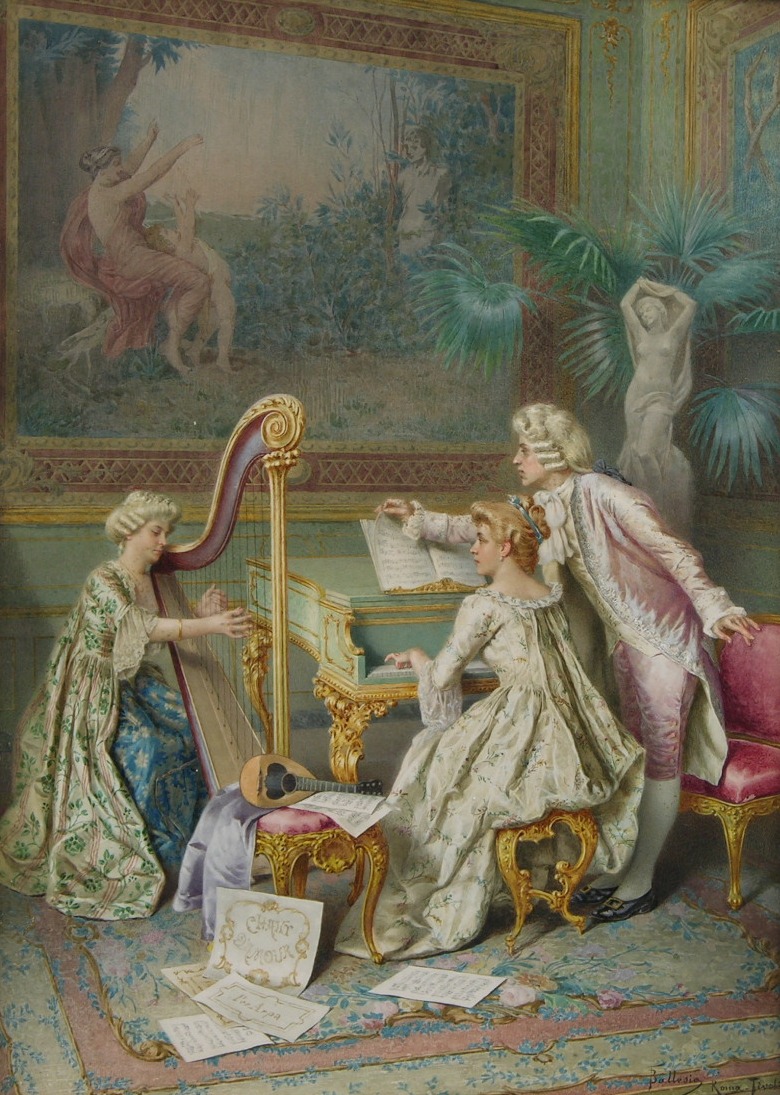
Rococo music scene